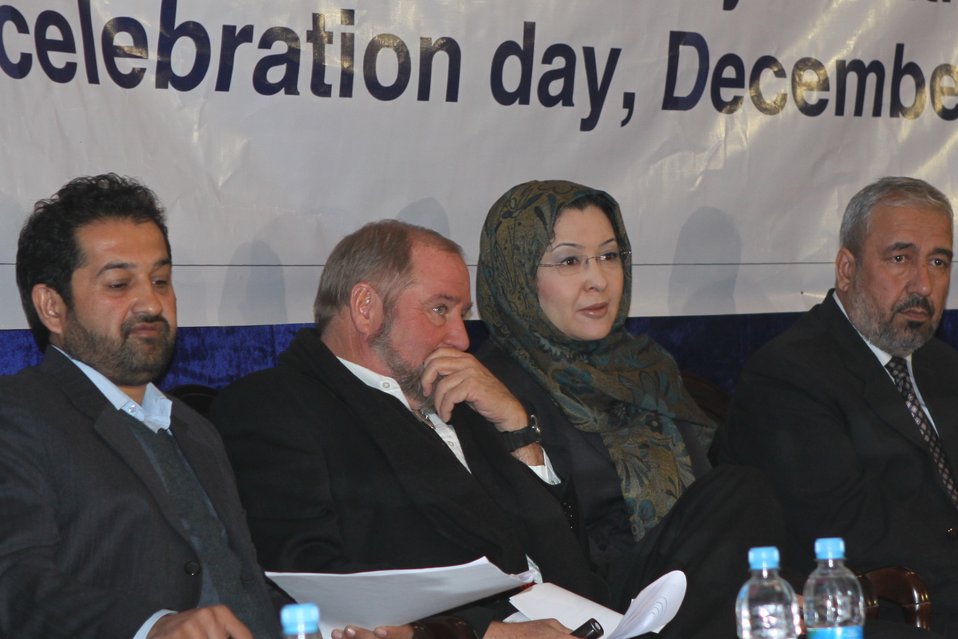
Community Health Workers Celebrated

Kabul, Afghanistan | December 5, 2010 — In support of the United Nations designated International Volunteer Day for Economic and Social Development, Afghanistan’s Ministry of Public Health celebrated its annual Community Health Worker Day today. Acting Minister of Public Health Dr. Suraya Dalil, USAID Senior Deputy Mission Director Robert Hellyer, other government officials, and international donors joined in recognizing the critical contribution of community health workers in Afghanistan and encouraging them to continue their voluntary support to their communities.
The event praised the contributions of the more than 22,000 volunteers throughout the country who deliver community level health-education, counseling, and services out of village health posts located in private homes. The Ministry of Public Health envisioned that community-based healthcare programs will actively encourage communities and families to adopt healthy lifestyles and behaviors, and provide families access to high quality and socially acceptable preventative medicine and life-saving services.
“We have 22,000 community health workers in Afghanistan that are able to implement the basic and standard medicines. They all have been trained through a job description,” said Minister Dalil. Addressing the health workers, she added, “I am proud and feel powerful that I have people like you.”
USAID-funded health projects collaborate closely with the Ministry of Public Health to improve the health and nutritional status of Afghans, provide quality primary healthcare, and promote healthy behaviors at the community and household-levels. USAID supported the training of more than 9,000 of the volunteer community health workers currently working in Afghanistan.
“On behalf of the American people, I congratulate the Community Health Workers for their diligence to gain the skills and knowledge necessary to serve their communities in this important role,” said USAID Senior Deputy Mission Director Hellyer. “USAID strongly supports community based health care and believes that quality community-based health services are essential to reaching Afghanistan’s Millennium Development Goals.”
To support the Basic Package of Health Services, USAID assisted in developing the community health worker training manual, helped train community health worker supervisors and master-trainers, facilitated in-service training, and produced and developed reporting tools, job aids, and education materials.